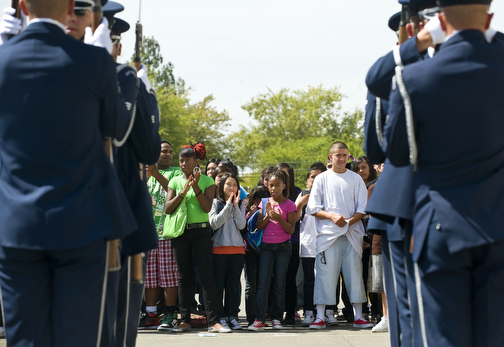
Air Force Week-Sacramento

The United States Air Force Honor Guard Drill Team performs during a visit to Rosa Parks Middle School in Sacramento, Calif., Sept. 10, 2009,for Air Force Week-Sacramento. Air Force Week is an event using various activities and exhibitions to educate the community about the Air Force's capabilities and missions.